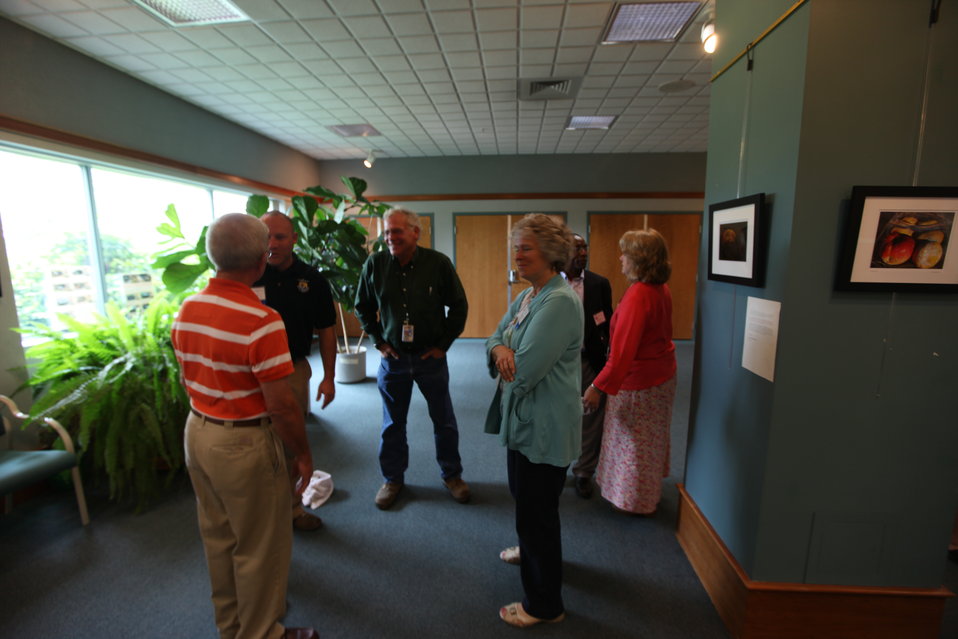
Northeast Region Employee Appreciation Awards

Before the awards ceremony, employees from the region catch up with each other.